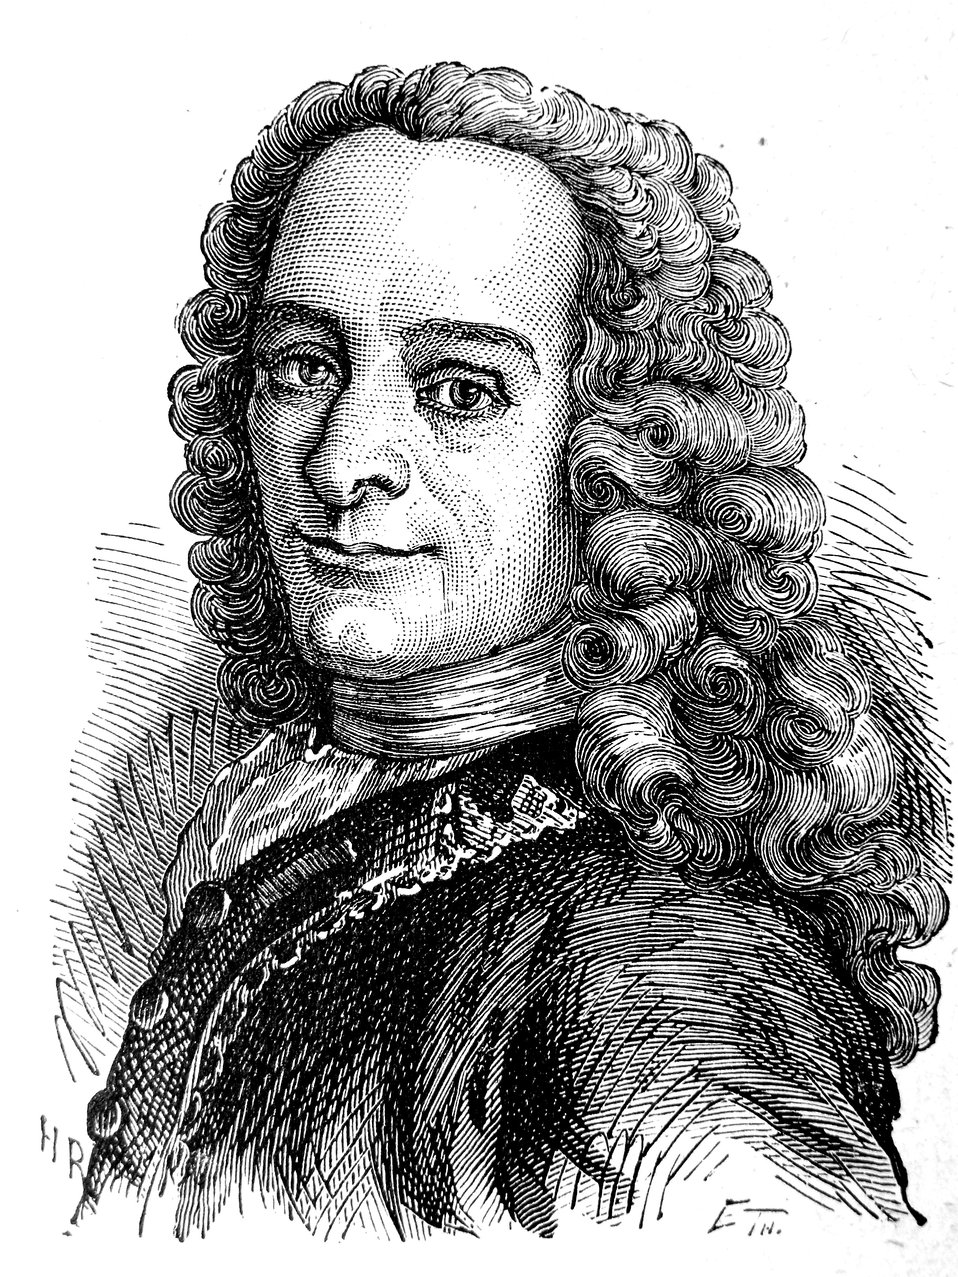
AduC 002 Voltaire (1694-1778)